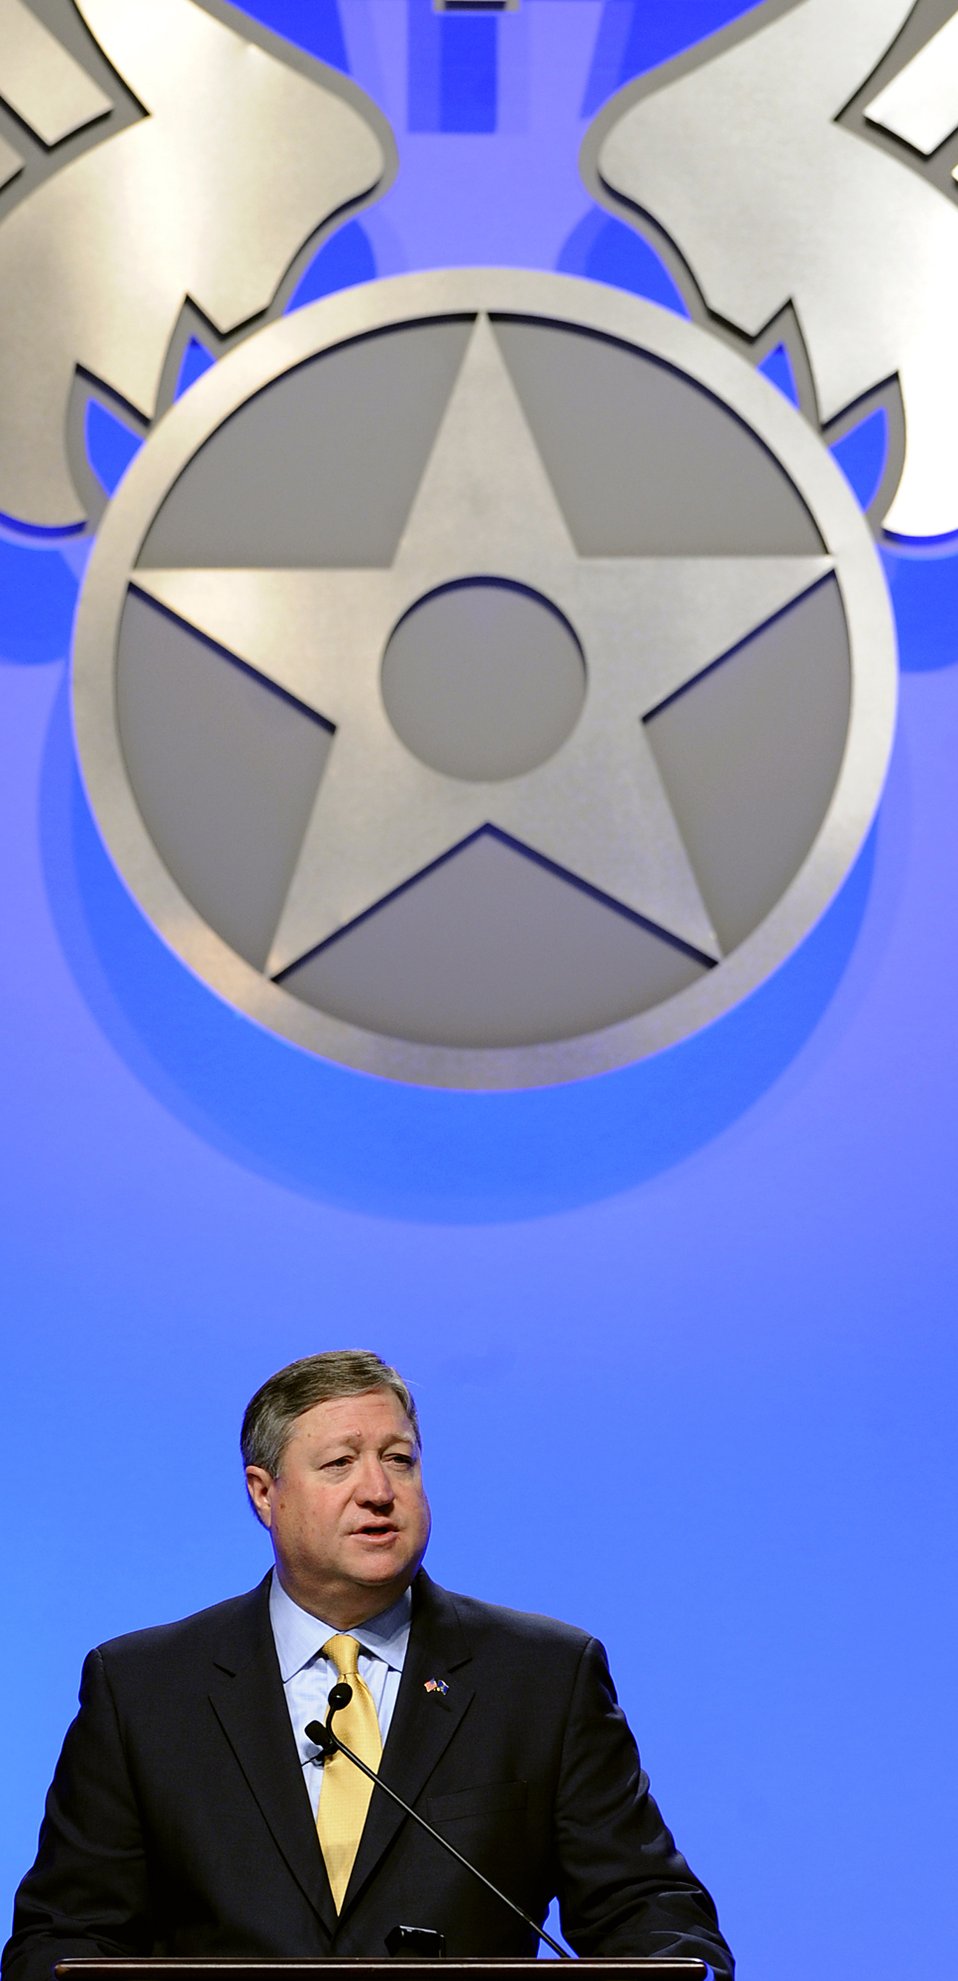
SecAF takes stock of progress, future challenges

Secretary of the Air Force Michael Donley speaks in Orlando, Fla., Feb. 18, 2011, during the Air Force Association's 27th Annual Air Warfare Symposium and Technology Exposition. Secretary Donley reviewed the Air Force's top priorities and underscored the service's commitment to making the most of available resources in a challenging fiscal environment.